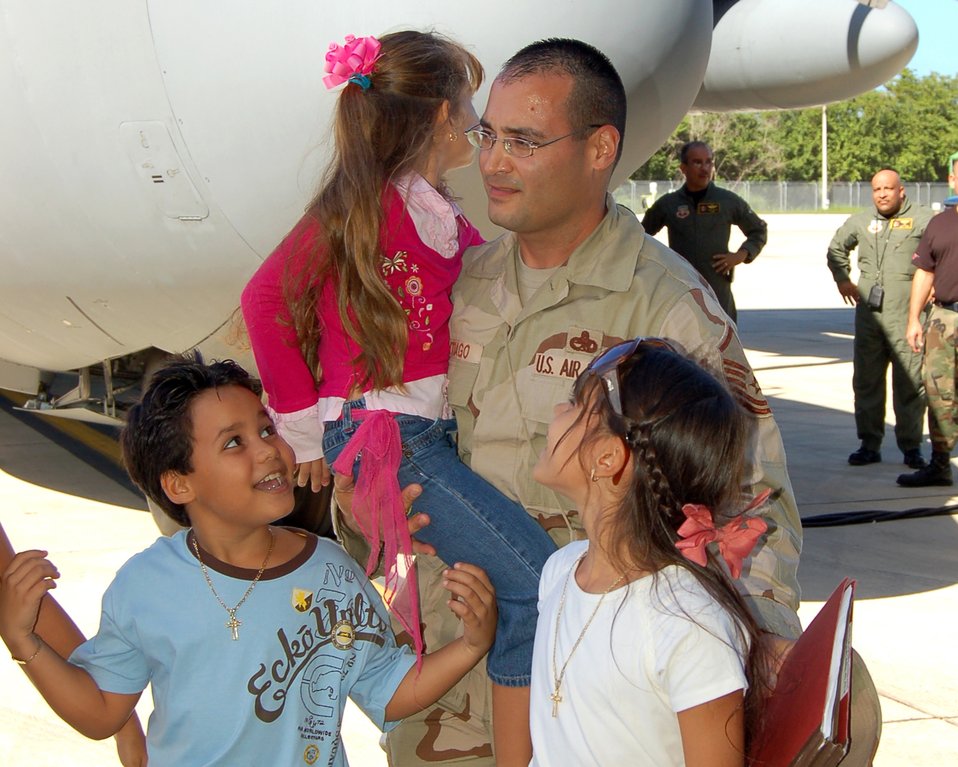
Buccaneers Return Home

Master Sgt. Ramon Santiago holds his daughter, Camila, as two of his other children, Ramon and Arianna, welcome him home at Mu√±iz Air National Guard Base, Puerto Rico, Dec. 16. The 156th Aircraft Maintenance Squadron jet engine mechanic was deployed to Bagram Air Base, Afghanistan. The unit is part of the 156th Airlift Wing of the Puerto Rico Air National Guard.